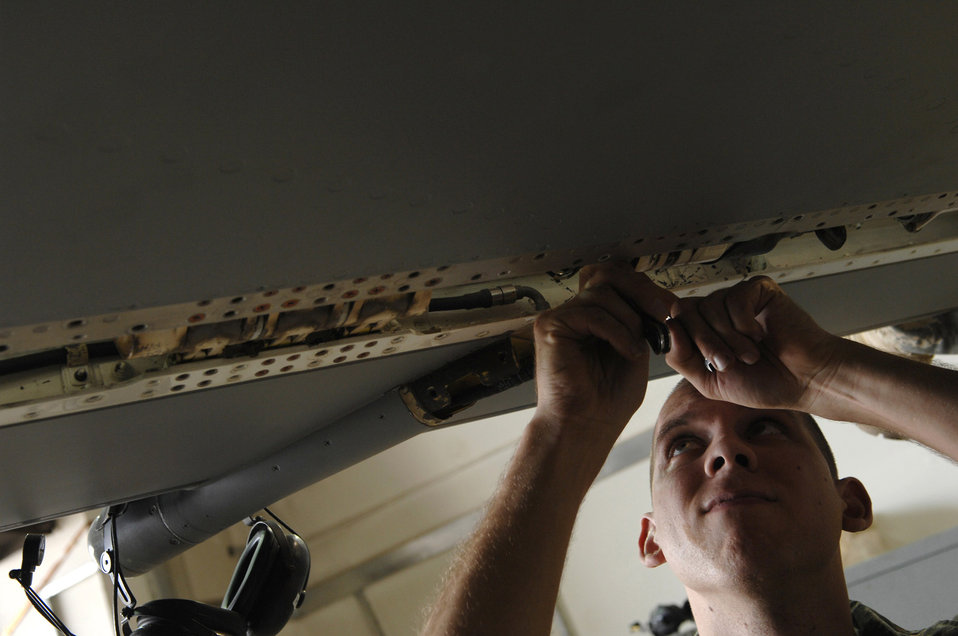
Just a phase

Airman 1st Class Shane Bridges reconnects a front leading edge actuator after it had been checked during a phase inspection of an F-16 Fighting Falcon June 18 at Joint Base Balad, Iraq. Ensuring the operability of the front leading edge flap is critical because the flap enhances the lift of the aircraft by creating an air channel under the wings, which provides more drag and allows the aircraft to maneuver during slower air speeds. Airman Bridges is a 332nd Expeditionary Aircraft Maintenance Squadron crew chief deployed from Shaw Air Force Base, S.C.